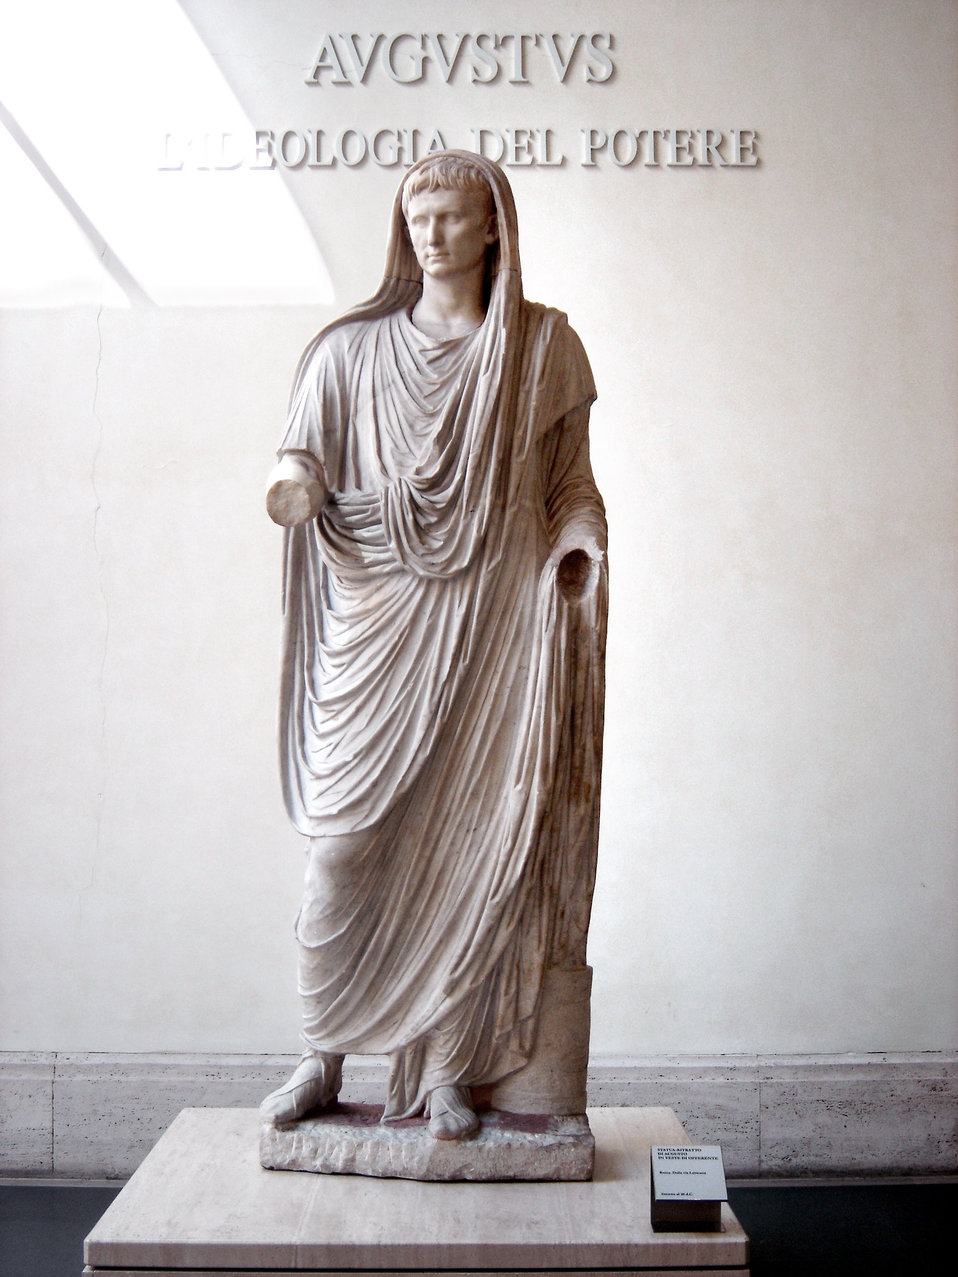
August as Pontifex Maximus: head covered, wearing the toga and calcei patricii (shoes reserved for Patricians), he extends his right arm to pour a libation; a cupsa (container for officiel documents) lies at his feet. Greek marble (arms and head) and Italic marble (body), Roman artwork of the late Augustan period, last decade of the 1st century CE. I (en:User:RyanFreisling) took this photo myself. Fran√ßais†: Auguste en pontifex maximus: t√™te couverte, v√™tu de la toge et chauss√© des calcei patricii (bottes r√©serv√©es aux patriciens), il avance le bras pour verser une libation†; une cupsa (√©tui pour documents officiels) g√Æt √† ses pieds. Marbre grec (t√™te et bras) et italique (corps), ≈ìuvre romaine de la fin de la p√©riode august√©enne, derni√®re d√©cennie du Ier si√®cle ap. J.-C. Italiano: Augusto nelle vesti di pontifex maximus: testa curvata, vestito della toga e calzando calcei patricii (calzature riservate ai patrizi), estende il braccio destro per versare la libagione; una cupsa (contenitore per documenti ufficiali) giace ai suoi piedi. Marmo greco (testa e braccia) e italico (corpo), opera romana della fine del periodo augusteo, ultima decate del I secolo a.C.AC, rinvenuta alle pendici del colle Oppio, in via Labicana e conservata al Museo Nazionale Romano di Palazzo Massimo alle Terme, Roma.